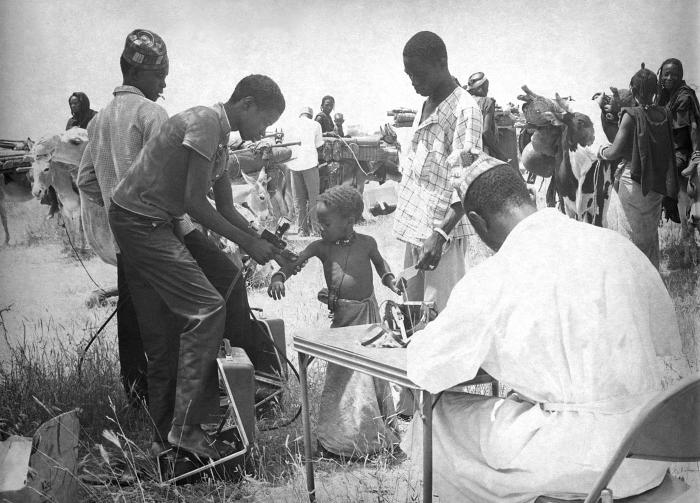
This image was acquired between 1967 and 1969 during Niger's Smallpox Eradication Program.